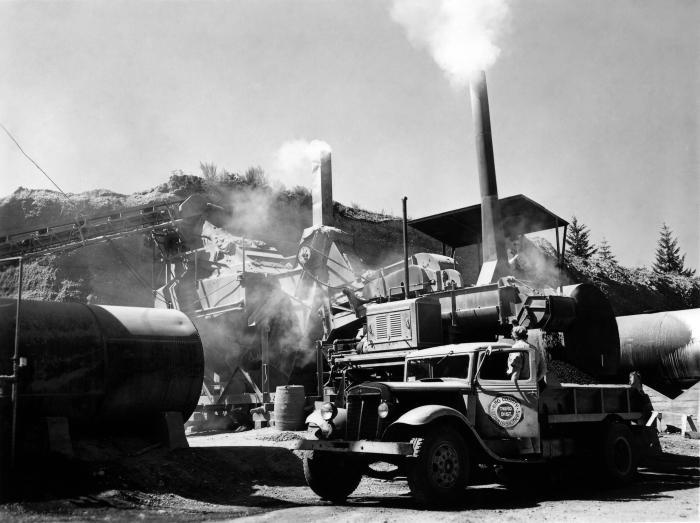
From October, 1947, this historic image, provided by the Center for Disease Control's (CDC), National Institute for Occupational Safety and Health (NIOSH), depicted a mechanized scenario inside a King County, Washington industrial quarry. Note the truck driver standing on the truck's rocker panel as he observed a load of an unknown material being loaded into the truck's bed. Note the large amounts of unfiltered atmospheric pollutants being released into the immediate vicinity.